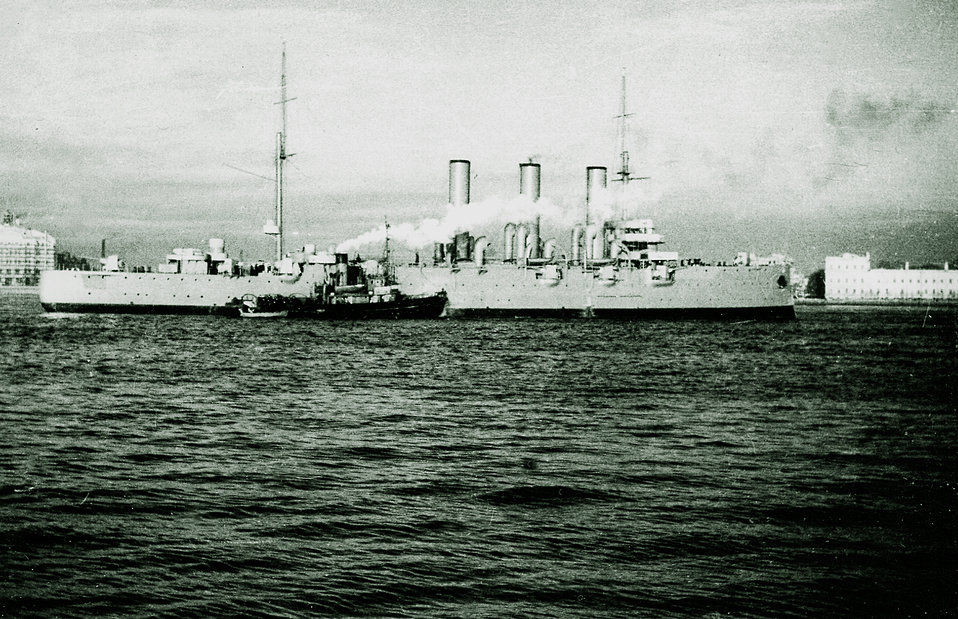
Russian protected cruiser Aurora. The last appearance. Русский: Последний выход «Авроры» на Неву.